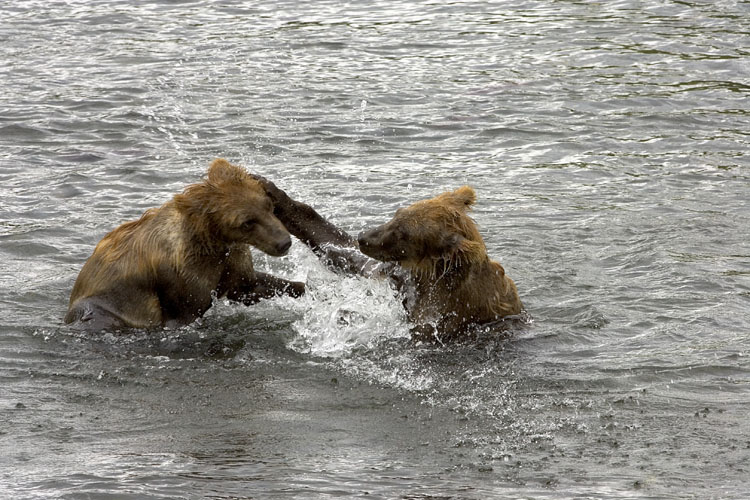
Bears of Kodiak Refuge

Playful Kodiak Bears